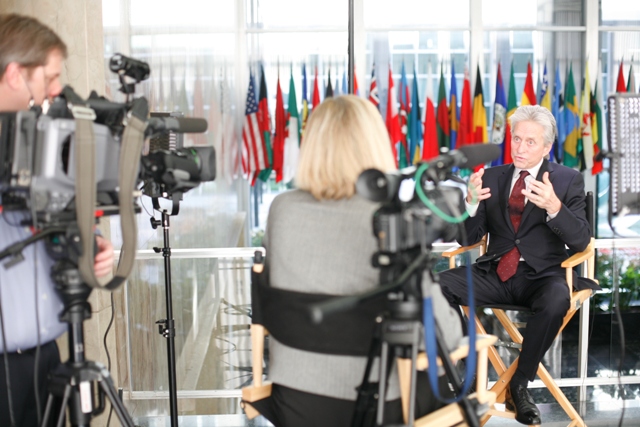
Deputy Assistant Secretary Esser Speaks With Actor Michael Douglas

Deputy Assistant Secretary of Public Affairs Victoria Esser speaks with Actor Michael Douglas during his visit to the U.S. Department of State in Washington, D.C., on November 3, 2011.